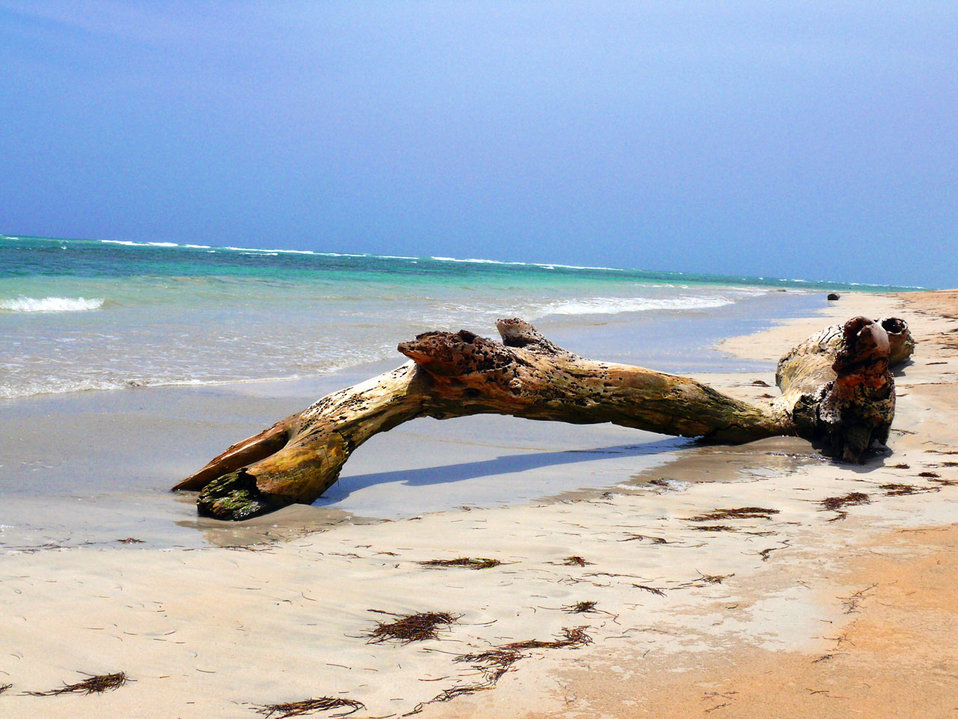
Wood on the beach.